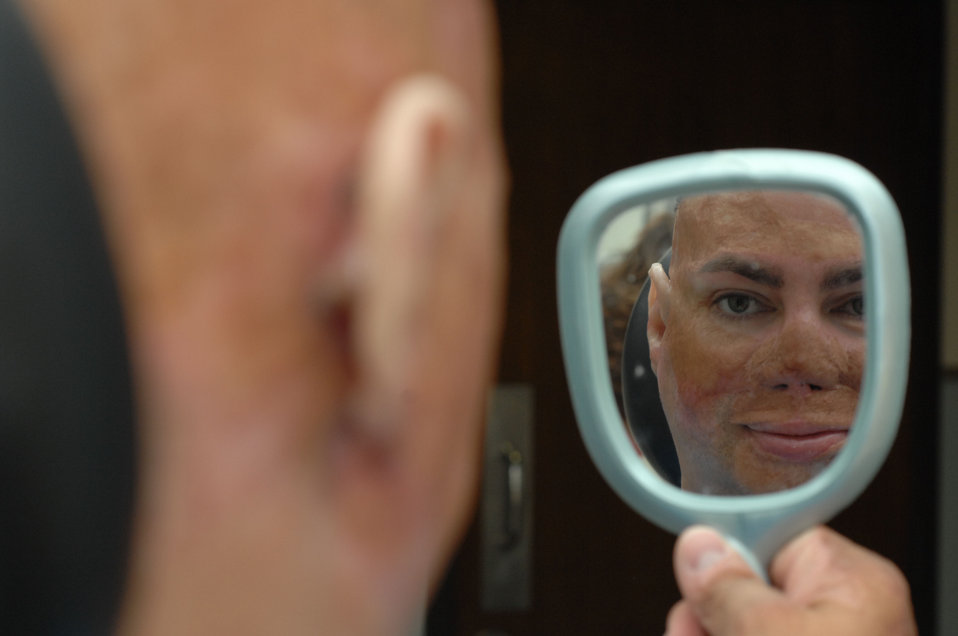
Wounded warrior gets perfect fit

Retired Army Staff Sgt. Shilo Harris views the placement of his prosthetic ears Oct. 5, 2010, at Wilford Hall Medical Center, Lackland Air Force Base, Texas. Wounded in Iraq, Sergeant Harris has endured several medical procedures in the course of three years. During this time he has become a nationally recognized speaker, educating communities about support for wounded warriors. The 59th Medical Wing's Maxillofacial Prosthetics Department is one of only a few in the Department of Defense that creates prosthetic body parts, such as eyes, ears and noses.